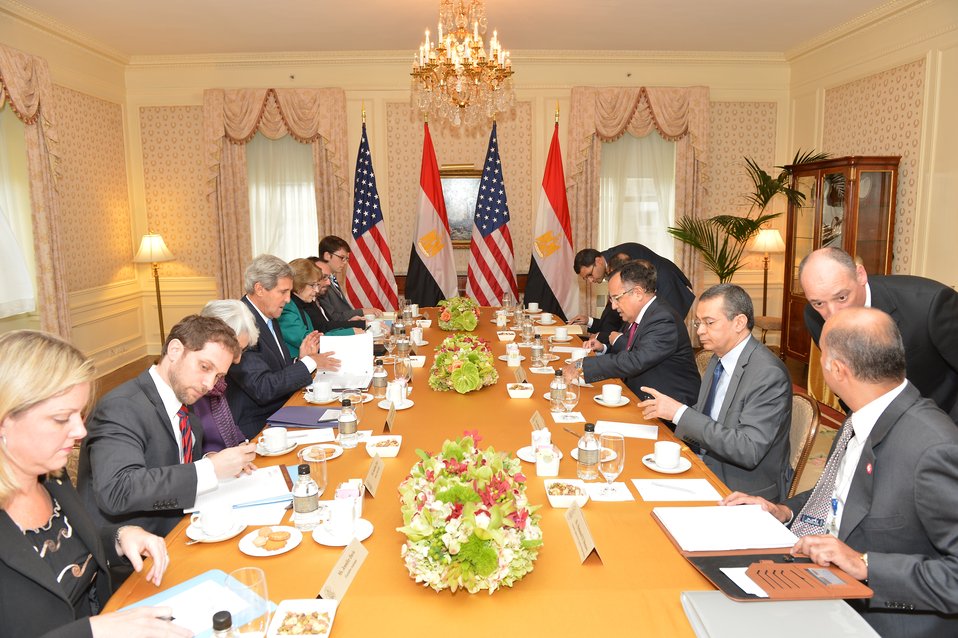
Secretary Kerry Meets With Egyptian Foreign Minster Fahmy

U.S. Secretary of State John Kerry holds a bilateral meeting with Egyptian Foreign Minister Nabil Fahmy in New York City on September 22, 2013.